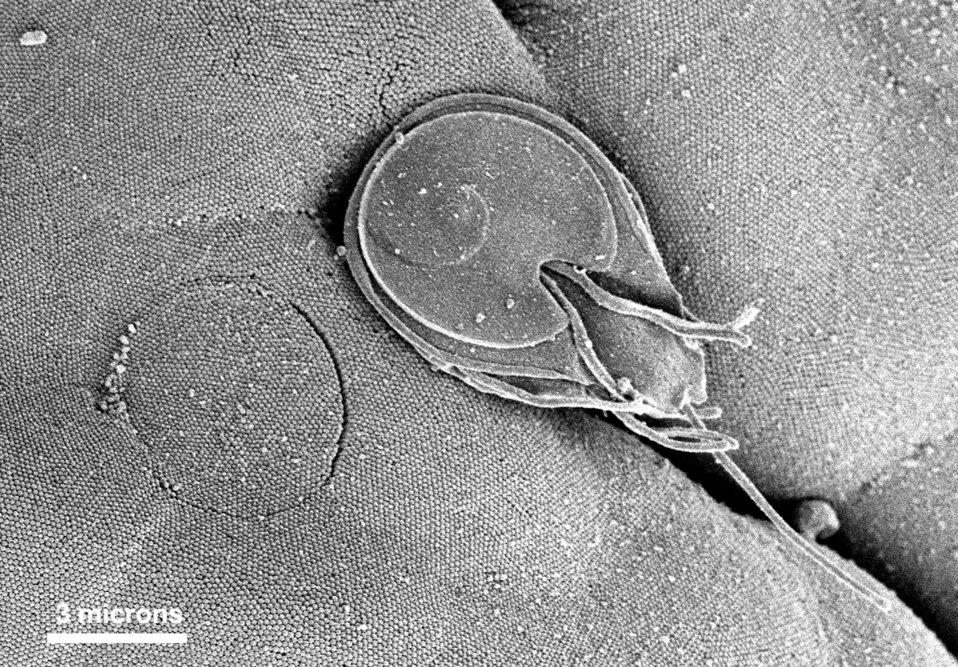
This scanning electron micrograph (SEM) revealed, a circular lesion on the mucosal microvillous surface of the intestine on the left, which was a result of the tight adhesion produced by the ventral adhesive disk of a Giardia sp. protozoan. The Giardia trophozoite responsible for the lesion on the right, is seen lying on its dorsal surface in this figure, thereby, revealing the circular ventral adhesive disk. Each small circular profile under the protozoan represents the rounded tip of a single microvillous, and it is estimated that 2000 to 3000 microvilli cover the surface of a single intestinal epithelial cell.